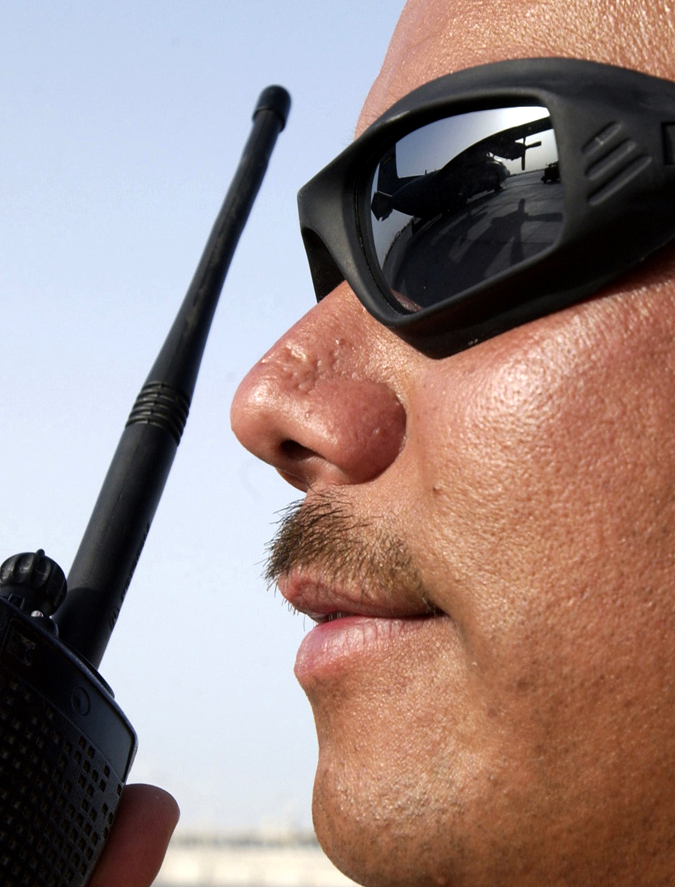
Moving mountains

SOUTHWEST ASIA -- Staff Sgt. Darrin Padilla contacts ramp dispatch after loading a C-130 Hercules. In March and April, Airmen from the 8th Expeditionary Air Mobility Squadron moved more than 10,000 short tons of cargo. Sergeant Padilla is the load team chief and is deployed from Westover Air Reserve Base, Mass.